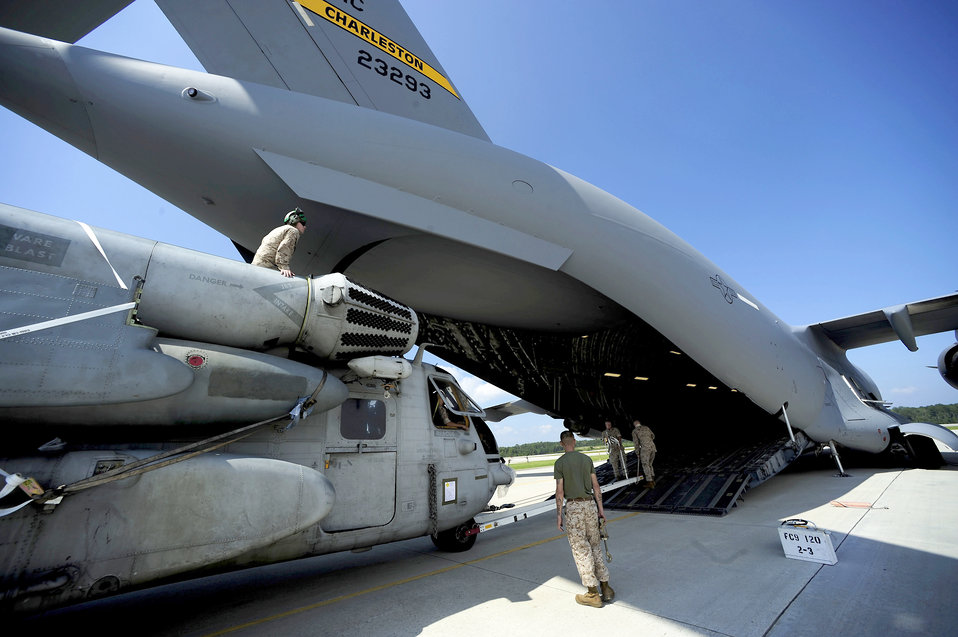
Pakistan flood relief effort

Airmen and Marines move a CH-53E Super Stallion onto a C-17 Globemaster III August 20, 2010, at Marine Corps Air Station Cherry Point, N.C. The helicopter is one of four that will be used to supplement U.S. military rescue and relief efforts in the flood-affected areas of Pakistan.